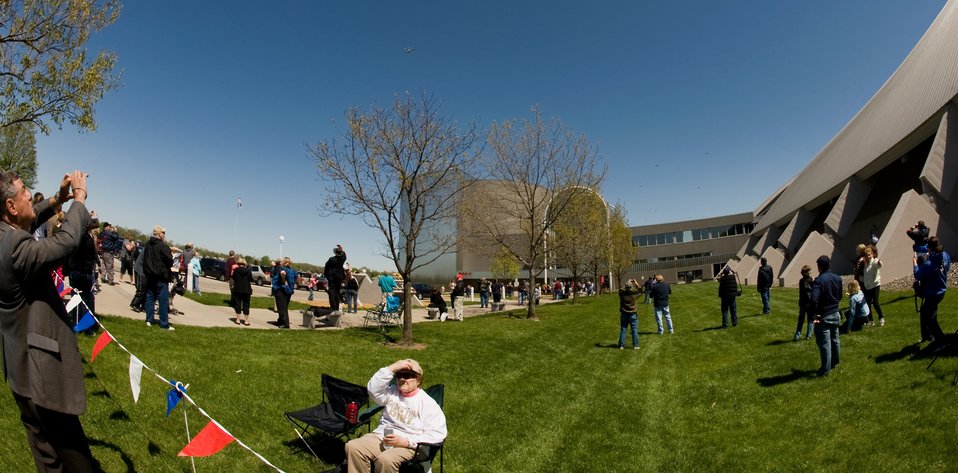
68th Reunion of Doolittle Raiders

Visitors at the National Museum of the U.S. Air Force were treated to the sight of 17 B-25 Mitchell Bombers flying in formation over Wright-Patterson Air Force Base, Ohio on April 18, 2010 for the 68th reunion of the Doolittle Raiders.